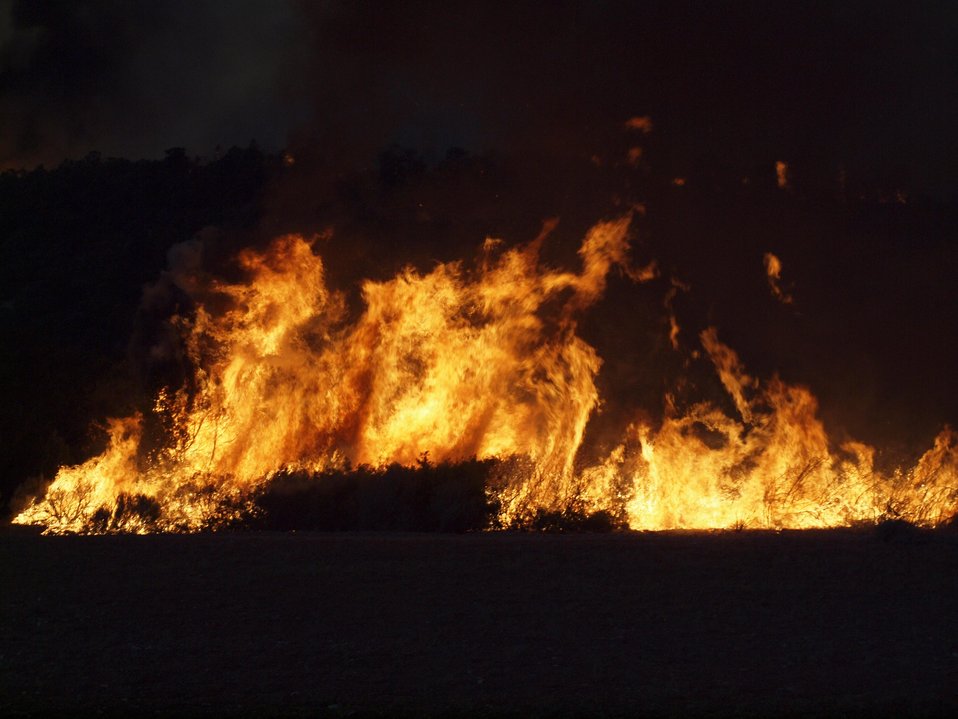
Carpenter Fire rages near Harris Ranch. The Carpenter Fire in the Toiyabe National Forest near Humboldt, NV was caused by a lightning strike on Jul. 1, 2013. The fire has consumed nearly 27,881acres and is presently 70% contained.